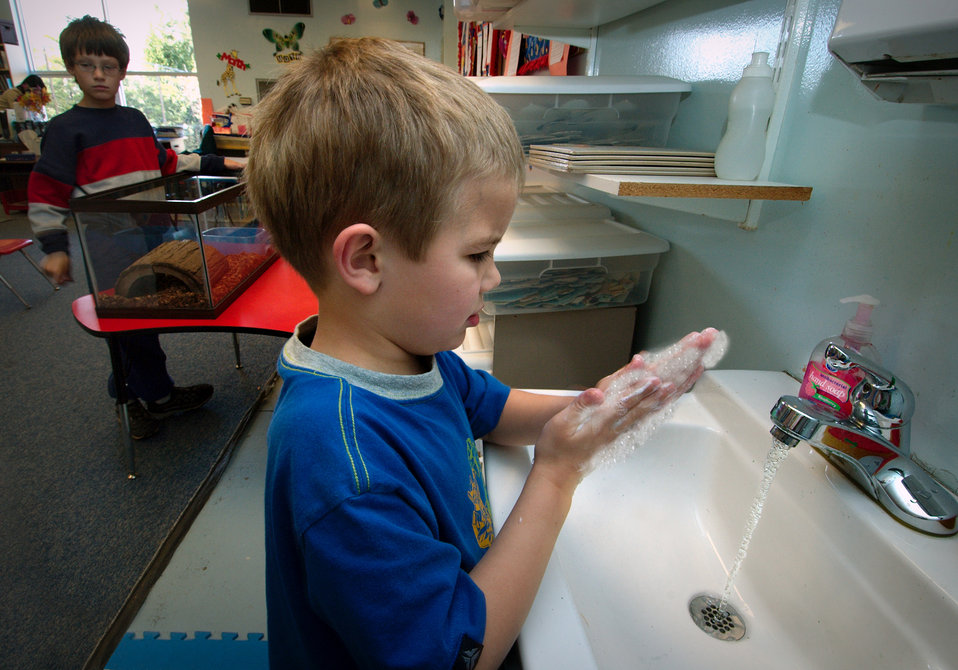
After having just handled a turtle, this young child was appropriately washing his hands, which potentially could have been contaminated with Salmonella bacteria that may have been carried by the pet turtle in this classroom. The sale of turtles less than 4 inches in length has been banned in the United States since 1975. The ban by the U.S. Food and Drug Administration (FDA) has prevented an estimated 100,000 cases of salmonellosis annually in children.There are a number of ways one can prohibit the spread of these bacteria, but of the utmost importance, when handling turtles and other potential Salmonella carriers, wash your hands thoroughly, and keep small children under the age of five, the elderly, and anyone who is immunocompromised away from direct contact with these creatures. For additional information on prevention and safety, please visit the link below!